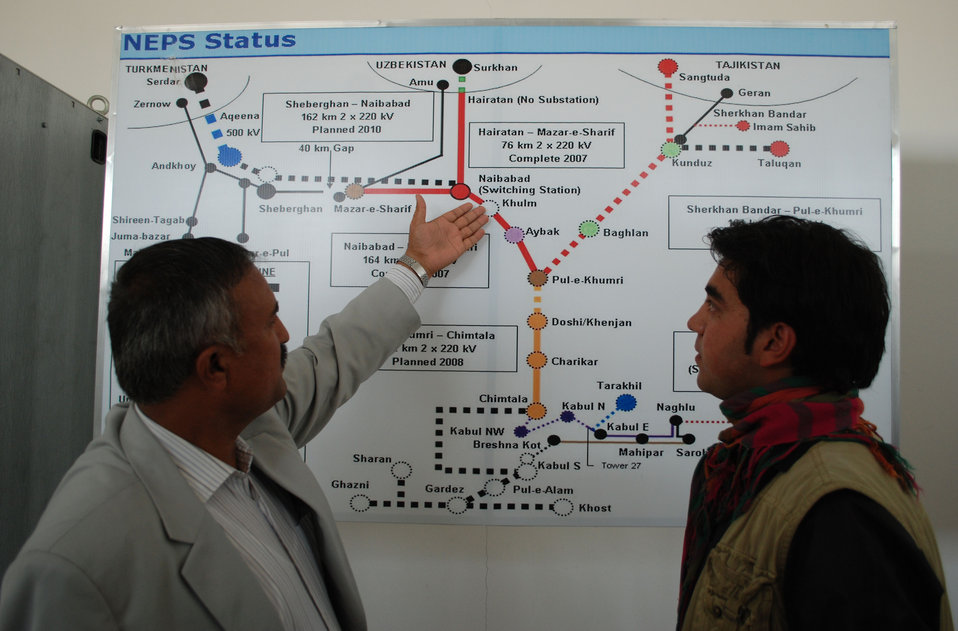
'On the Road' in Balkh Province